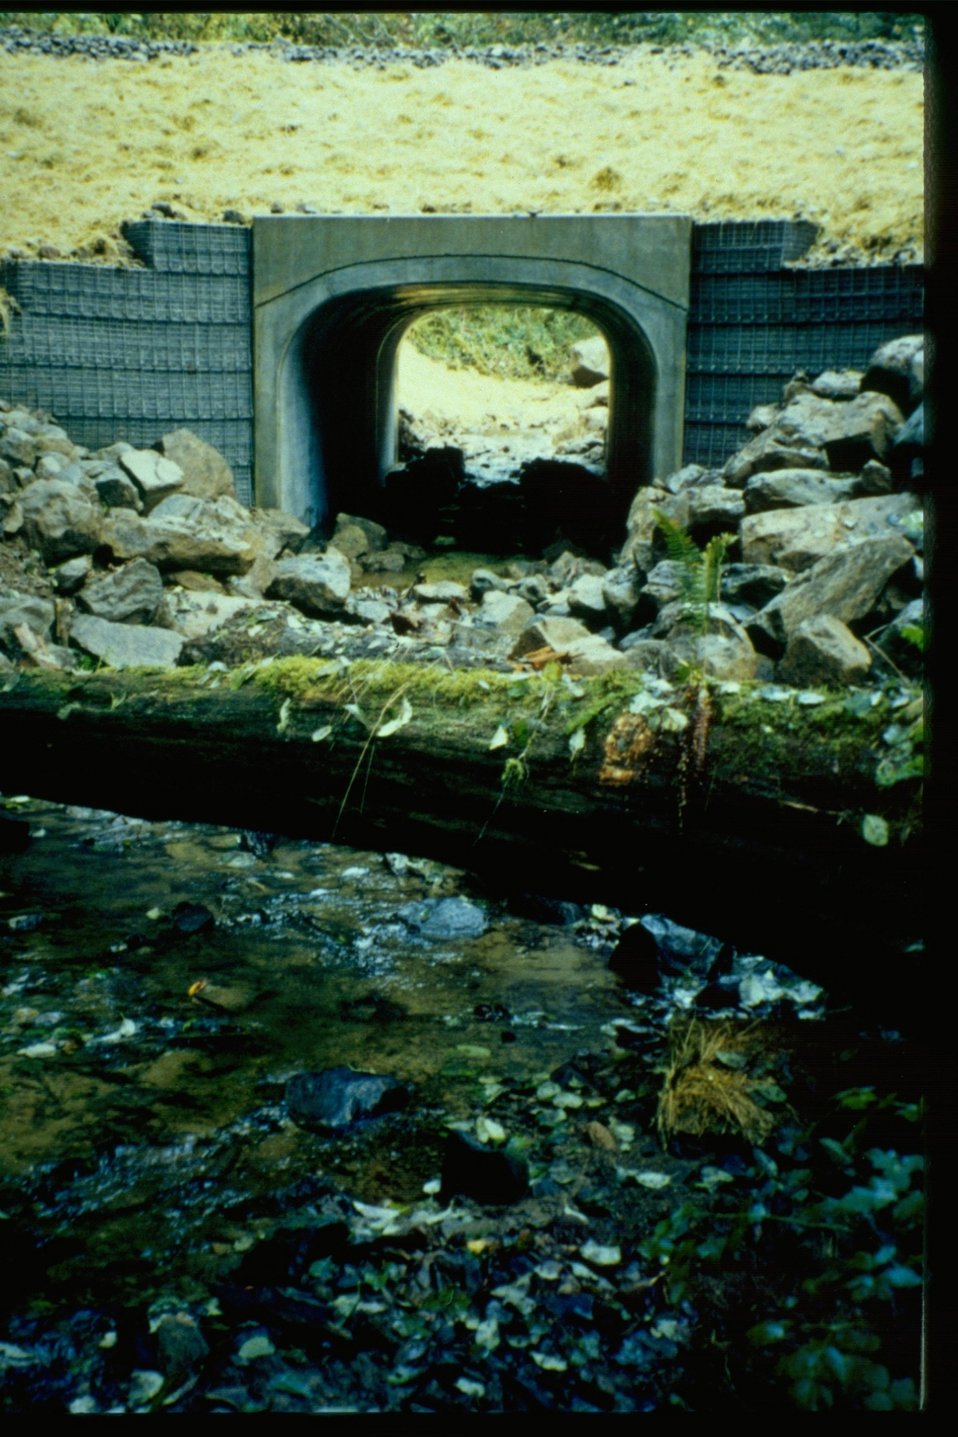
Cole Creek culvert replacement for fish passage.